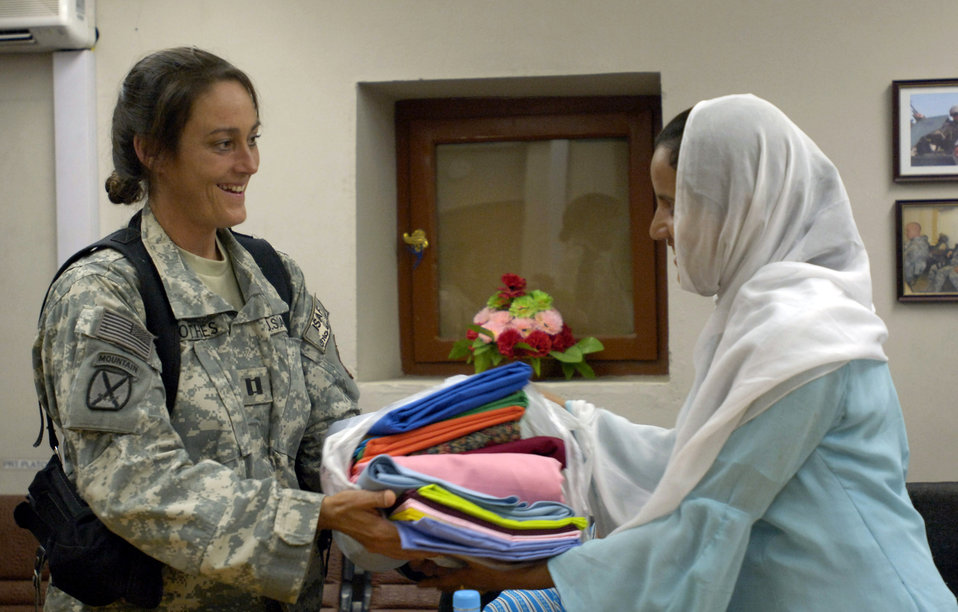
American, Afghan women join together for tea, discussion

Capt. Christa Lothes hands donated materials for a sewing class to a local Afghan woman Sept. 5 at Forward Operating Base Mehtar Lam. The women were attending an afternoon tea hosted by Female Airmen and Soldiers assigned to the Laghman Provincial Reconstruction Team for influential Afghan women living throughout Afghanistan's Laghman province. The event provides an opportunity to educate the Afghan women on humanitarian and security programs in place for them and their communities.